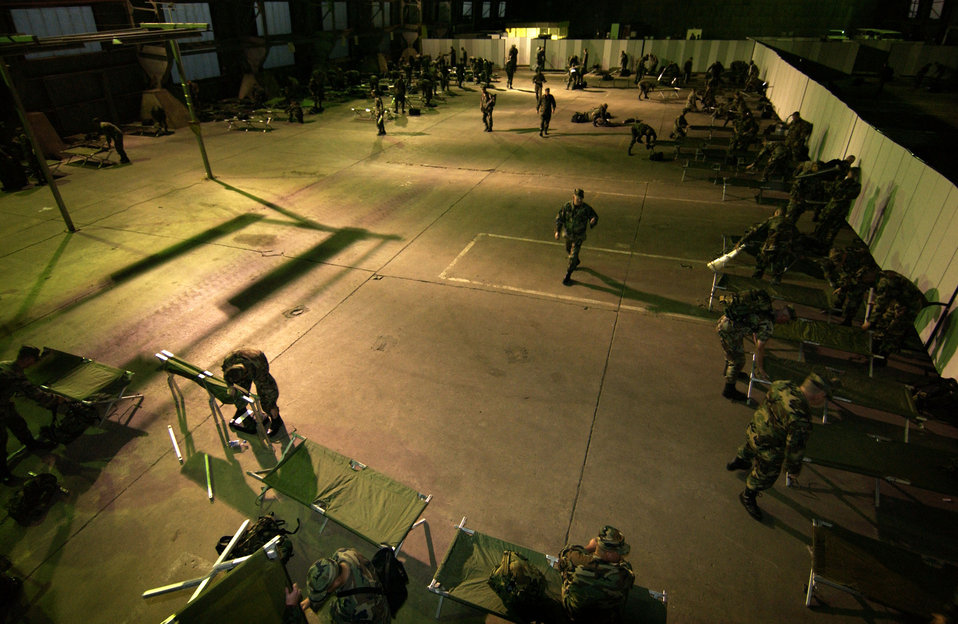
EAGLE FLAG

NAVAL AIR ENGINEERING STATION LAKEHURST, N.J. -- Airmen from the 27th Fighter Wing at Cannon Air Force Base, N.M., prepare their sleeping quarters inside a hangar here before the kickoff of the Air Force's newest flag-level exercise, Eagle Flag. The combat exercise will test expeditionary support skills used to open and establish an air base.